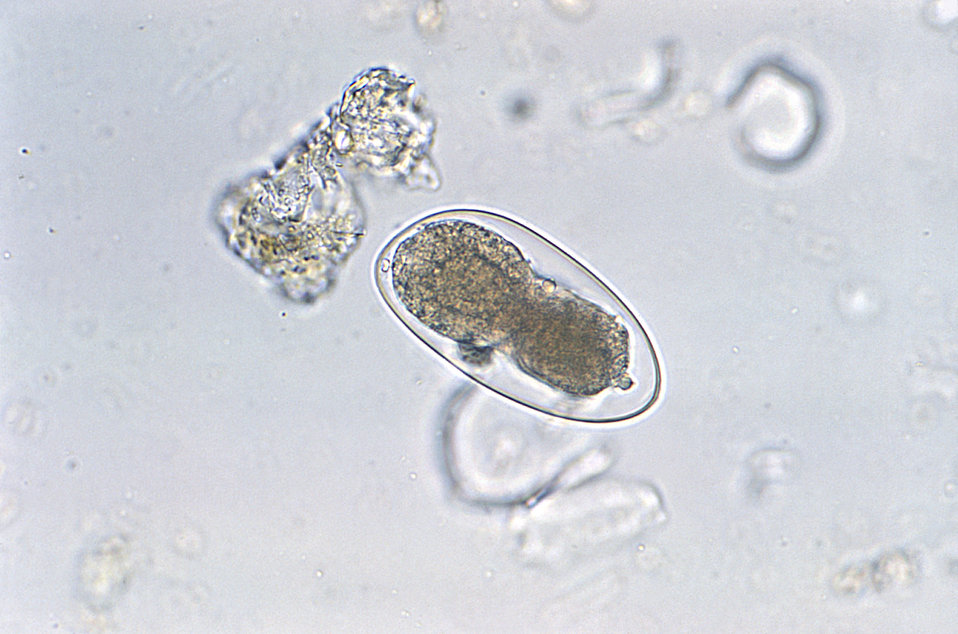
Egg of Trichostrongylus.